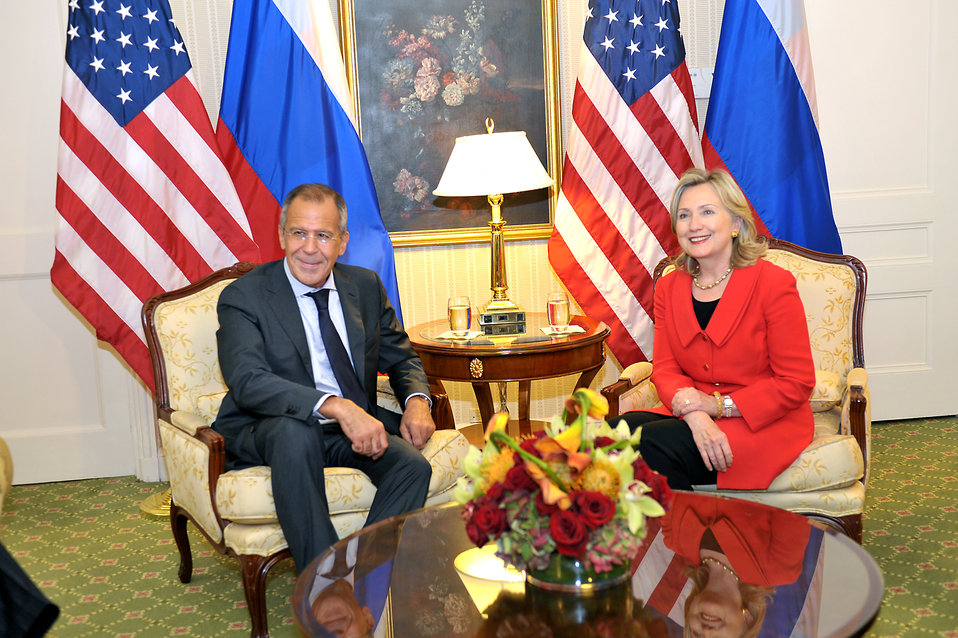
Secretary Clinton Holds a Bilateral With Russian Foreign Minister Lavrov

U.S. Secretary of State Hillary Rodham Clinton holds a bilateral meeting with Russian Foreign Minister Sergey Lavrov at the Waldorf-Astoria in New York, New York, on September 22, 2010.